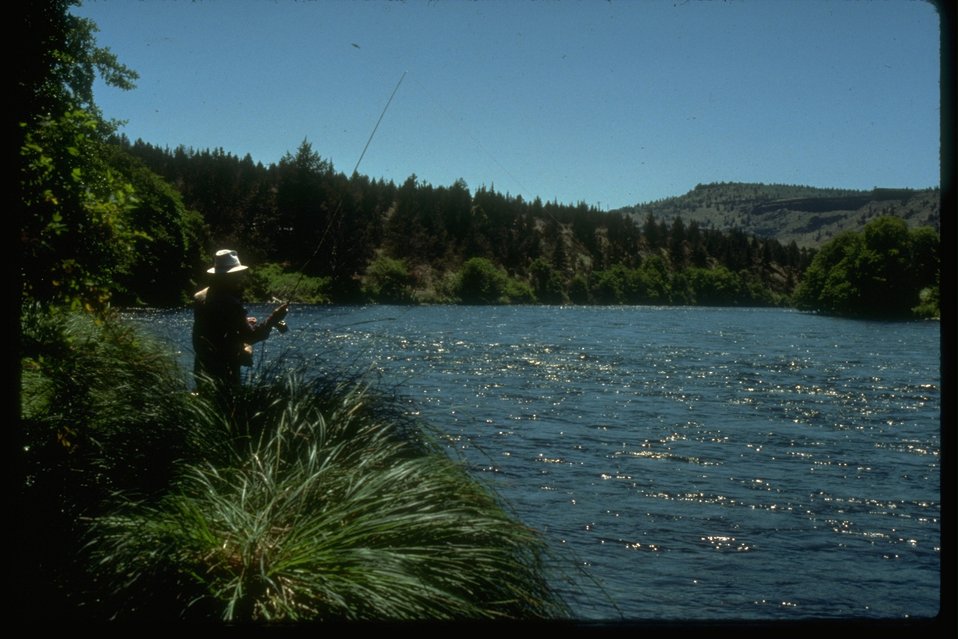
A fly fisherman on the Deschutes River in central Oregon.